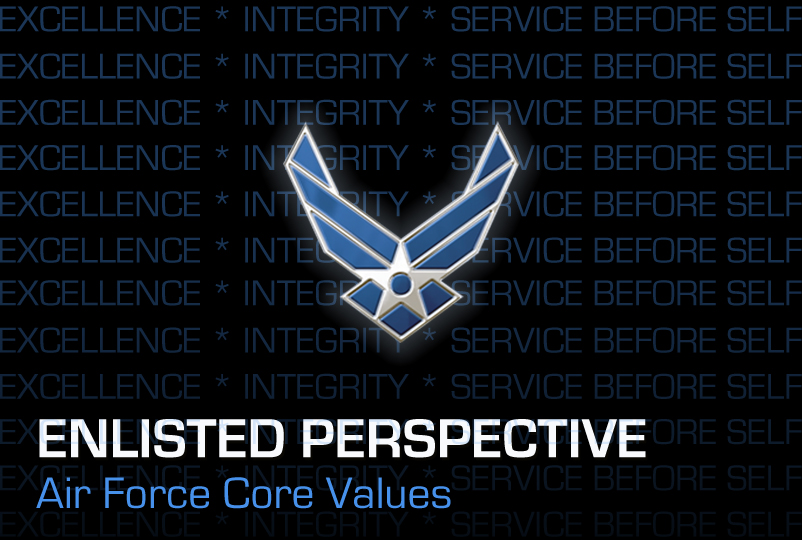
Air Force Core Values guide us